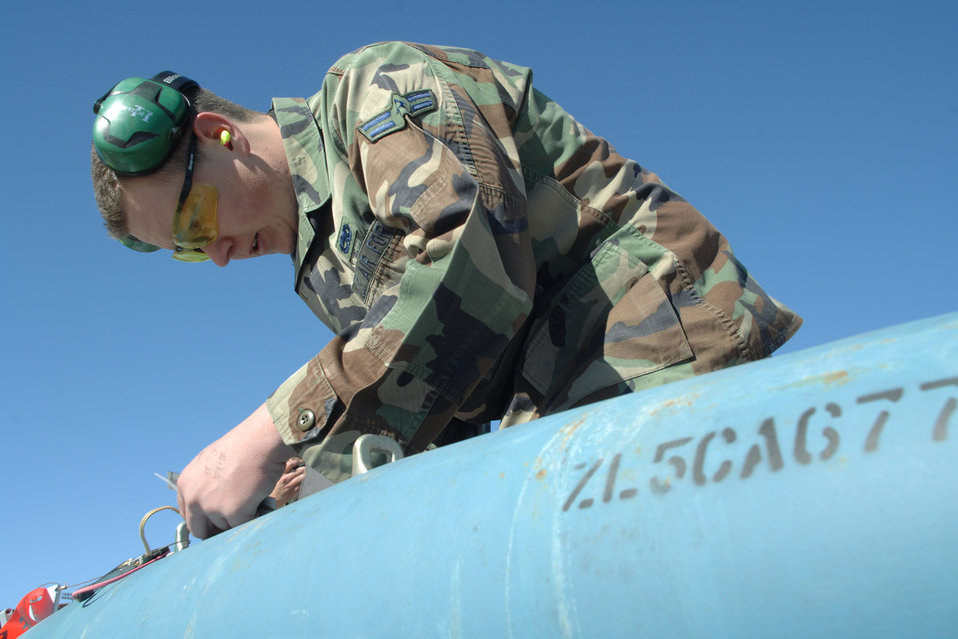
Holloman weapon loaders compete for last time on F-117

Airman 1st Class Ray Wornat works on a guided bomb unit-12, a 500-pound, general-purpose iron bomb during the F-117 Nighthawk Weapons Load Crew of the Year Competition Jan. 18 at Holloman Air Force Base, N.M. The competition placed the four best weapons load crews (two from the 8th Aircraft Maintenance Unit and two from the 9th Aircraft Maintenance Unit) against each other to determine who the best load crew of the year was. Airman Wornat is assigned to the 49th Aircraft Maintenance Squadron.